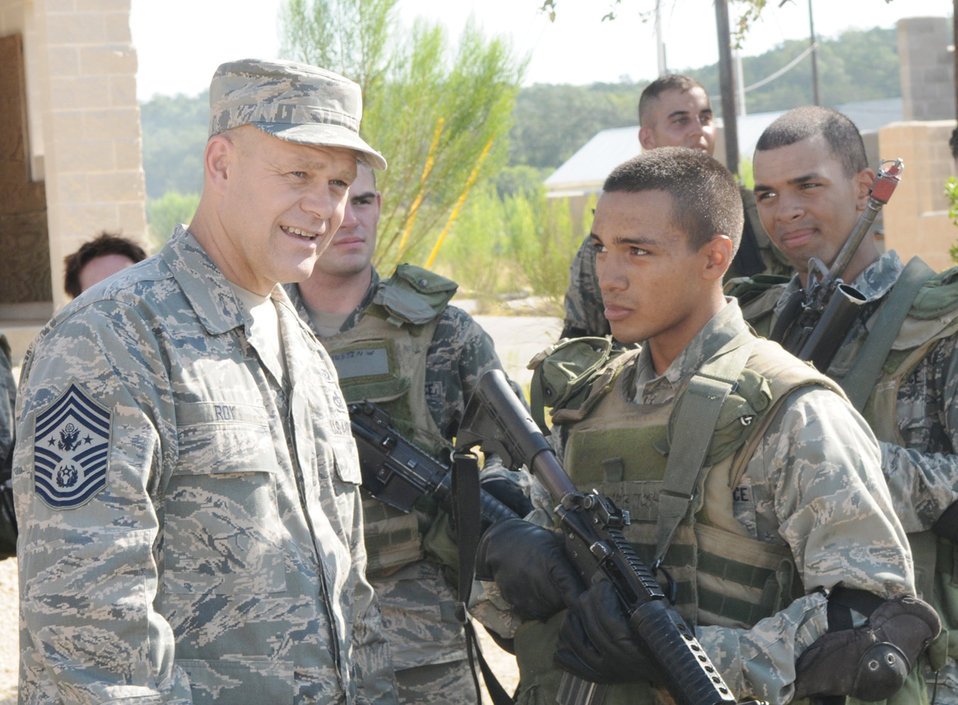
CMSAF discusses force priorities, continued support for families and wounded warriors

Chief Master Sergeant of the Air Force James A. Roy talks with security forces technical school students during Movement Over Urban Terrain training July 9 at Lackland Air Force Base, Texas.